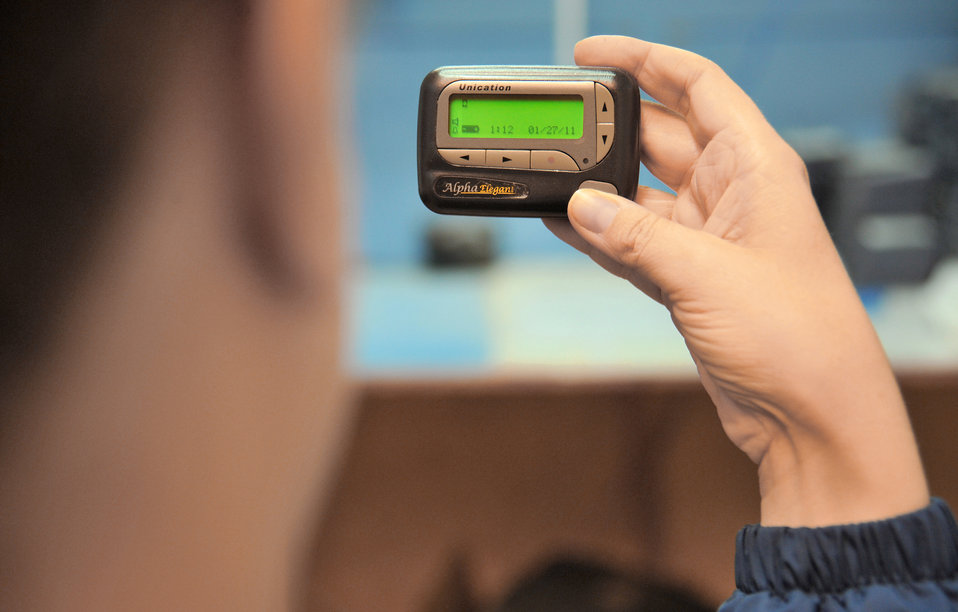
Airmen start next of kin notification process

Staff Sgt. Janae Steude checks for any new message alerts sent to her pager Jan. 27, 2011, at Contingency Operating Base Speicher, Iraq. Sergeant Steude is a 467th Casualty Liaison Team member.